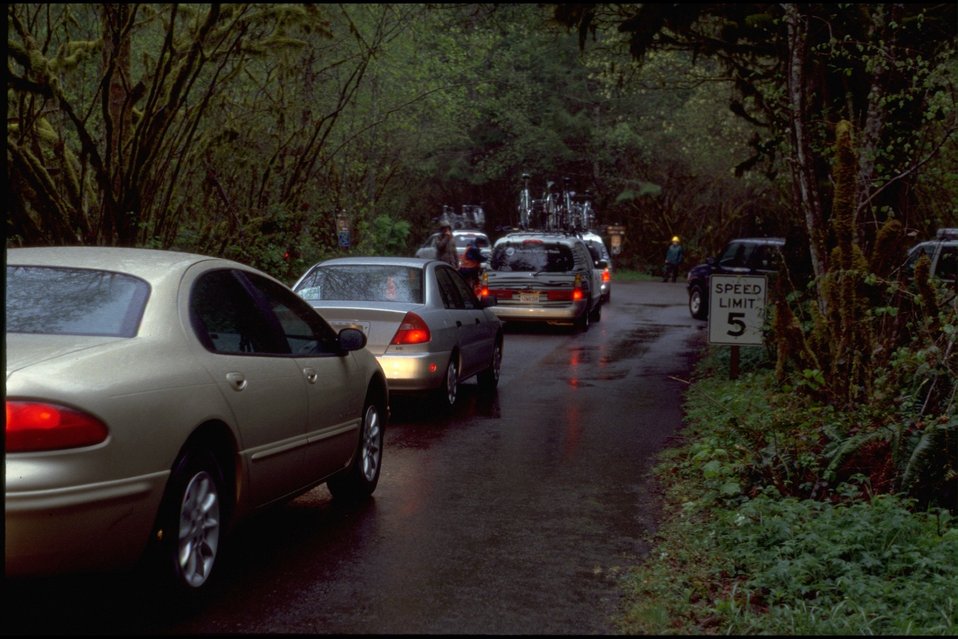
Tour of Willamette.